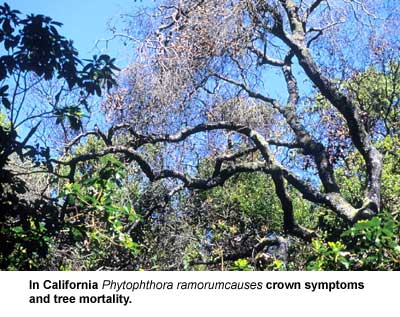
SOD-on-live-oak

An oak succumbs to Sudden Oak Death/US Forest Service photo